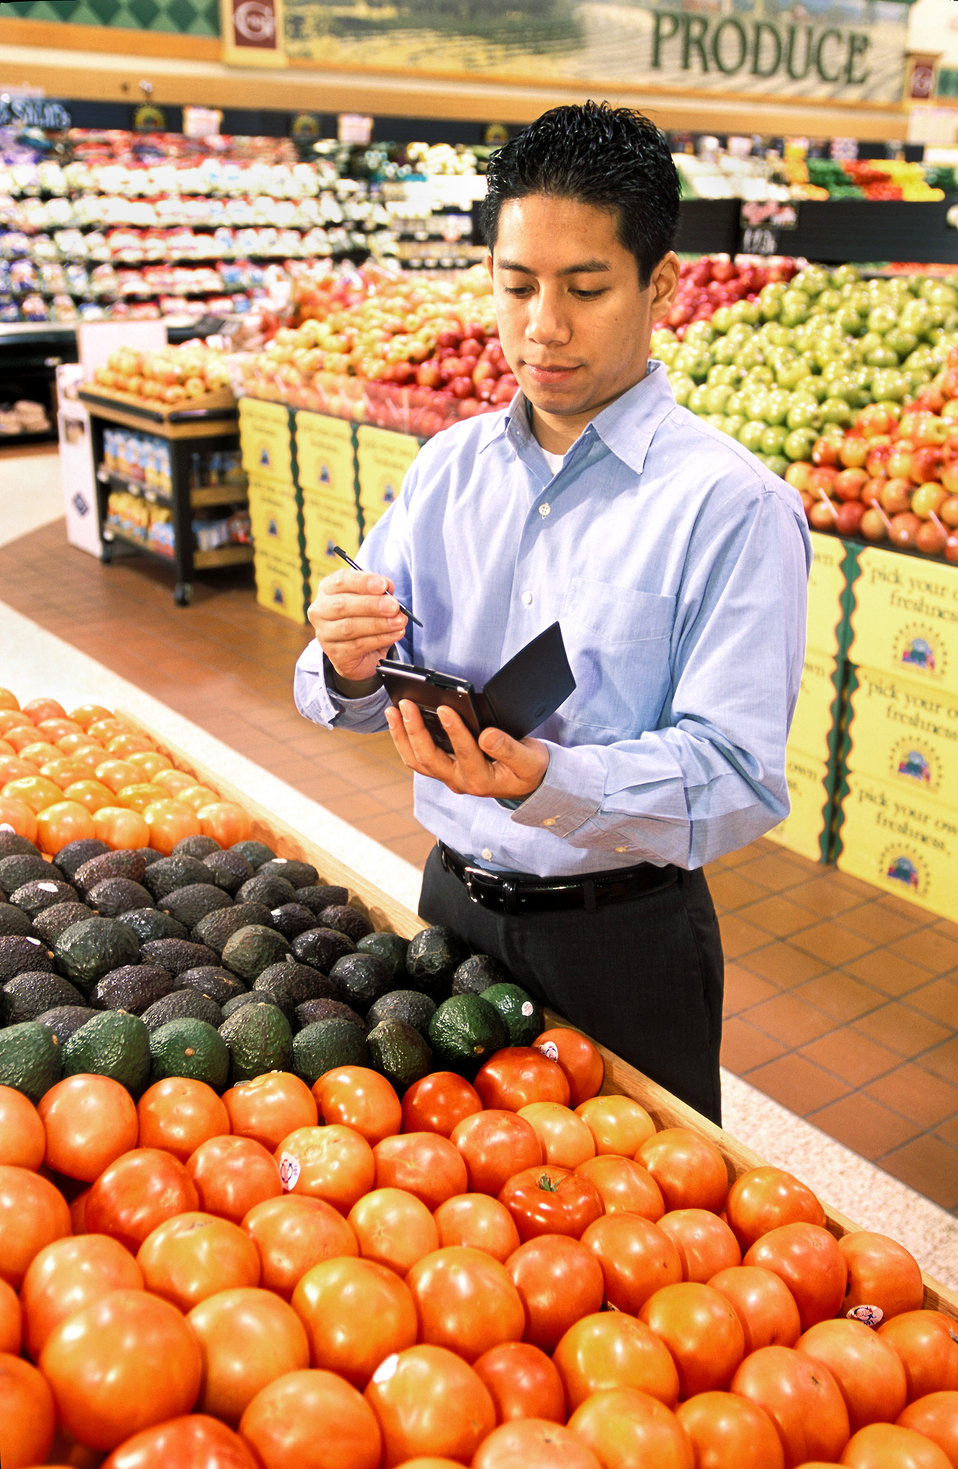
A shopper uses an electronic device to check nutrition information at a local supermarket on Jan. 24, 2012. Among the thousands of apps for iPhone, iPod Touch, Android, Windows Phone 7, and BlackBerry, many are nutrition/health related and are based on the download and import of the U.S. Department of Agriculture’s (USDA, Agriculture Research Service (ARS) Beltsville Human Nutrition Research Center (BHNRC) national nutrient databases.